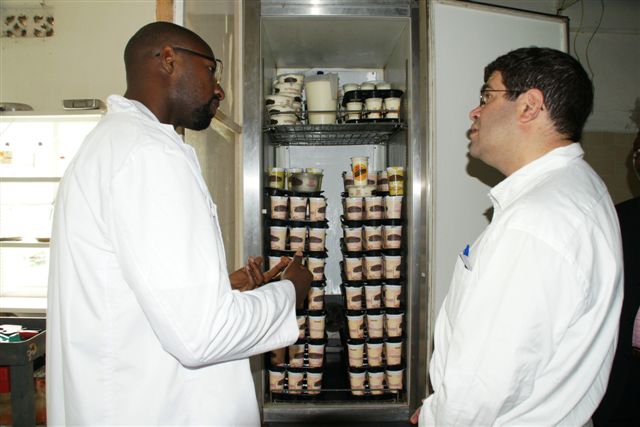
Deputy Secretary Neal Wolin’s trip to Africa 2009

Deputy Secretary Wolin views yogurt and cheese processed as part of the five-year dairy competitiveness project implemented by Land O’Lakes, Inc. The project aims to improve the quality of milk reaching consumers and help small dairy farmers and informal processors increase their competitiveness.